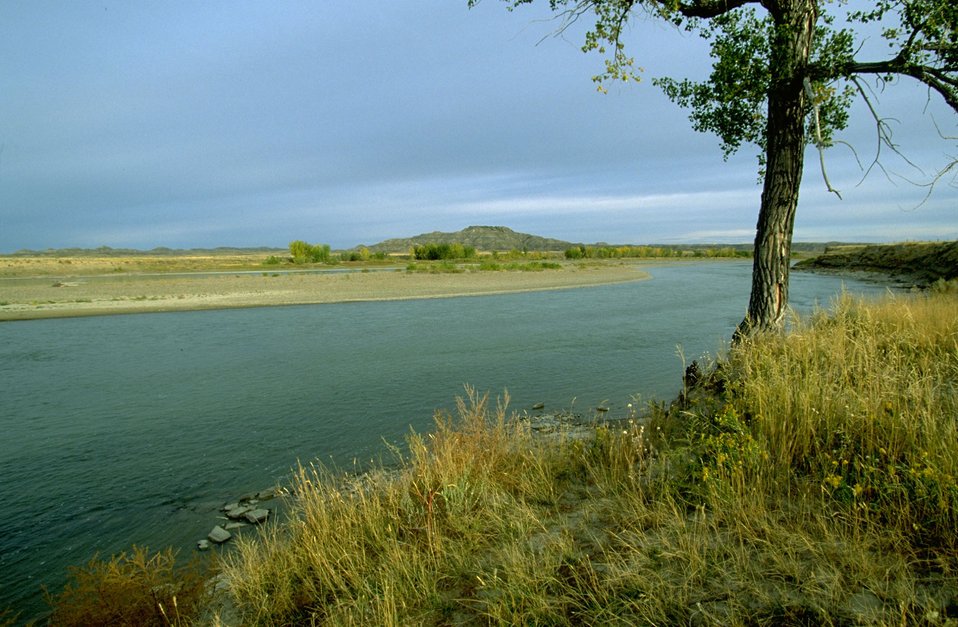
Sheridan Butte - Terry Badlands Wilderness Study Area